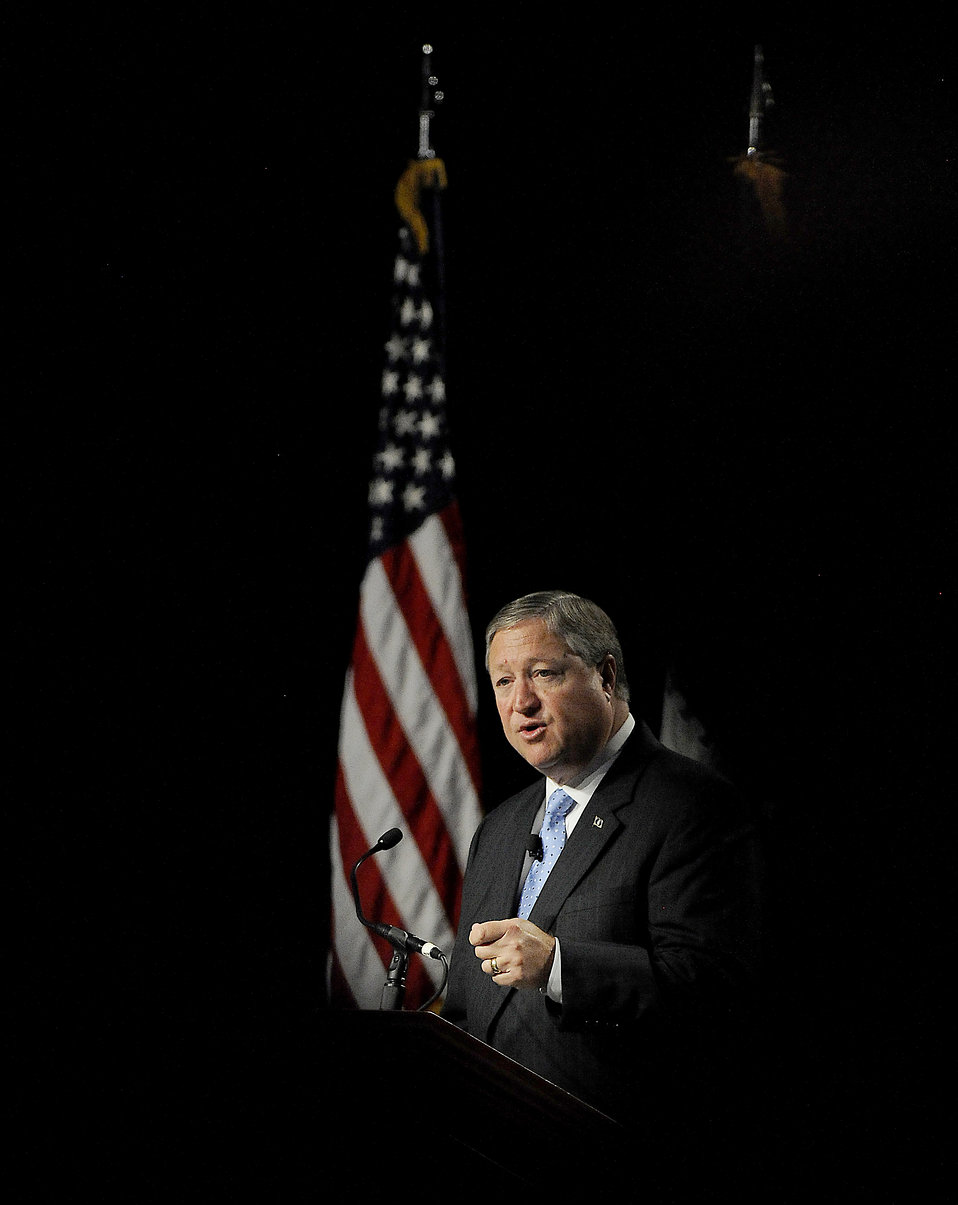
SecAF addresses AFA

Secretary of the Air Force Michael Donley delivers his keynote address during the Air Force Association's Air & Space Conference and Technology Exposition in Washington, D.C., on Sept. 17, 2012.